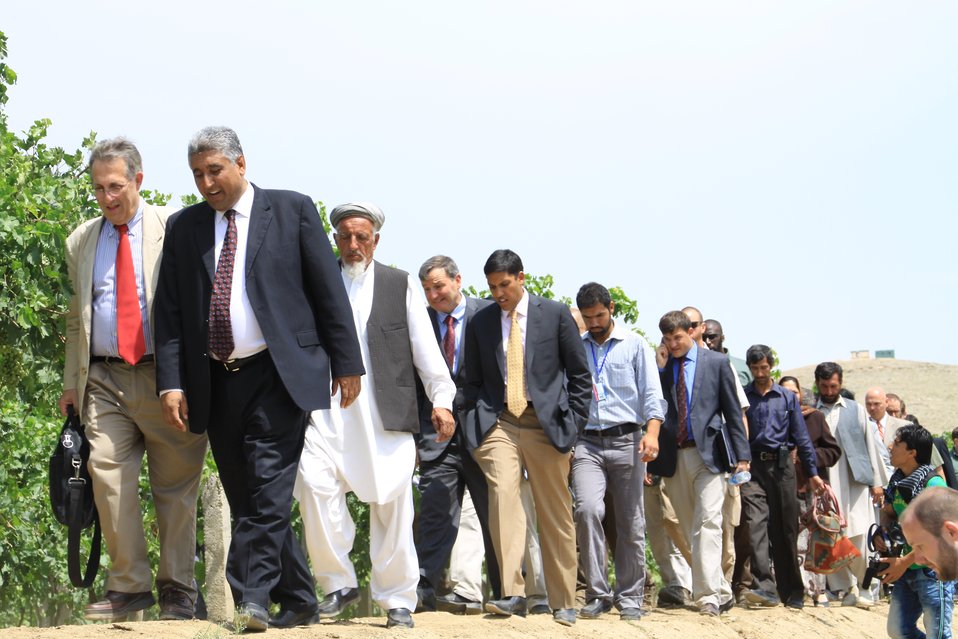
Badam Bagh Farm